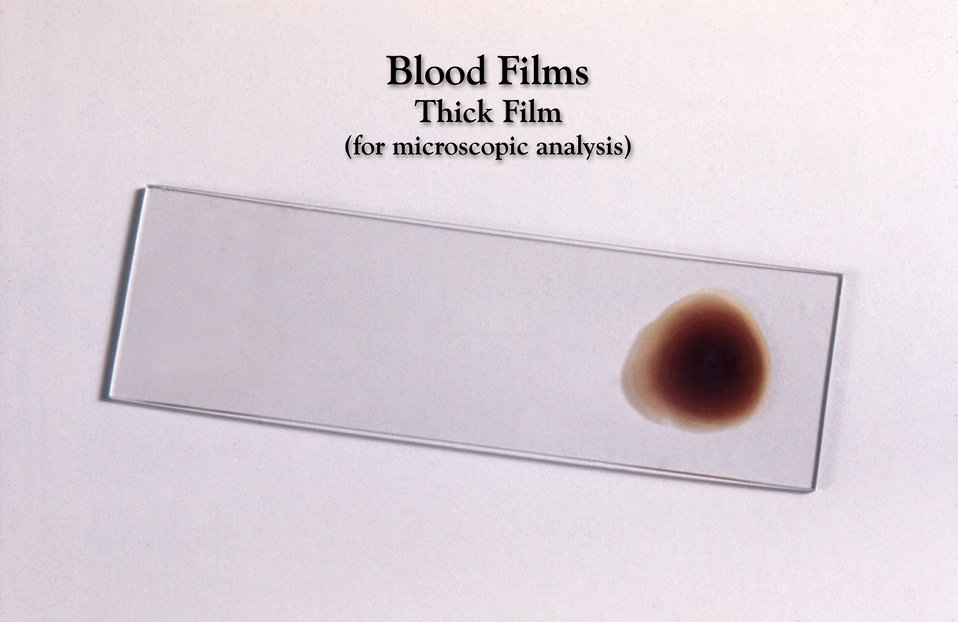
This prepared slide offers an example of the appearance of a thick film blood smear to be examined under the microscope.